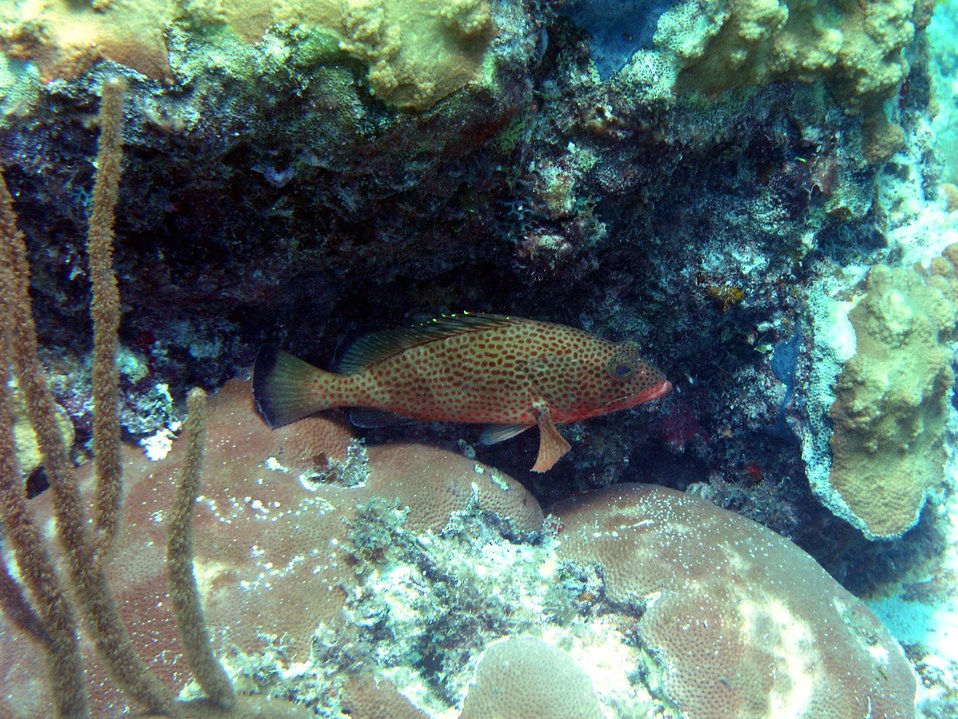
Red hind (Epinephelus guttatus)